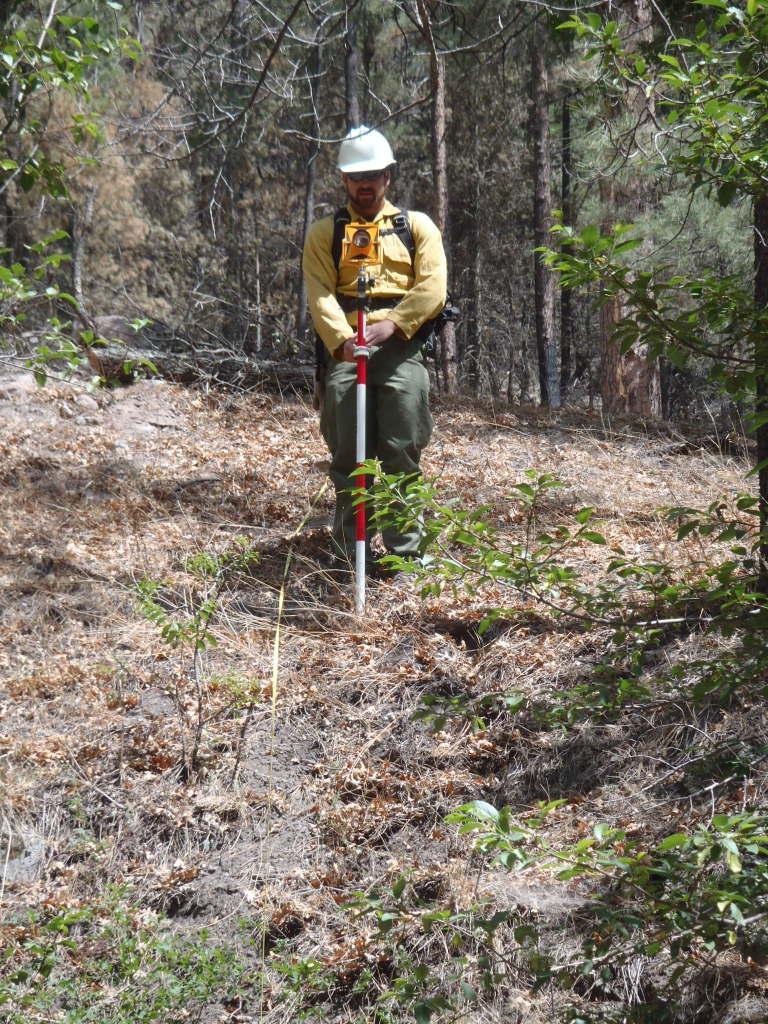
Burned Area Emergency Response (BAER) team hydrologist measures a cross section of Gallinas Creek in Gila National Forest near Kingston, NM. The Silver Post Fire response has the Burned Area Emergency Response (BAER) team beginning operations to seed acres of high burn severity and to mulch additional acres. Seeding reduces effects to downstream life, property, and infrastructure by reducing erosion and runoff. Areas of high burn severity are to be seeded with a quick germinating, non-persistent annual cereal barley that would provide rapid ground cover. A small percentage of native perennial species would also be included to give the burned area a jump start in natural recovery, and provide for long-term ground cover. Mulch is the most effective treatment for controlling erosion and runoff, as it provides immediate ground cover. Mulch also assists in stabilizing soil in and around these areas.